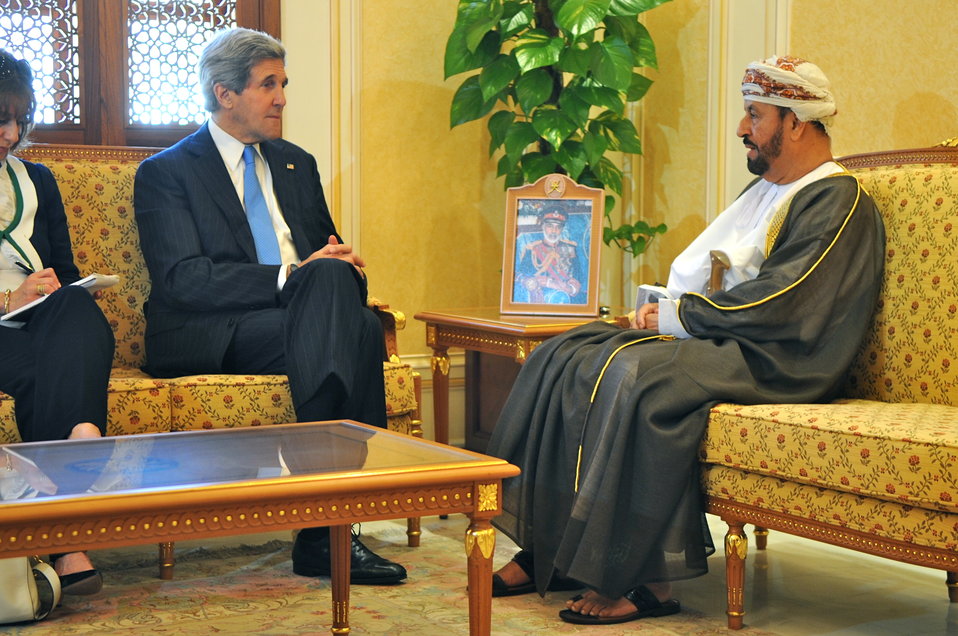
Secretary Kerry Meets With Omani Minister Responsible for Defense Affairs Sayyid Badr al-Busaidi

U.S. Secretary of State John Kerry meets with Omani Minister Responsible for Defense Affairs Sayyid Badr al-Busaidi in Muscat, Oman, on May 22, 2013.